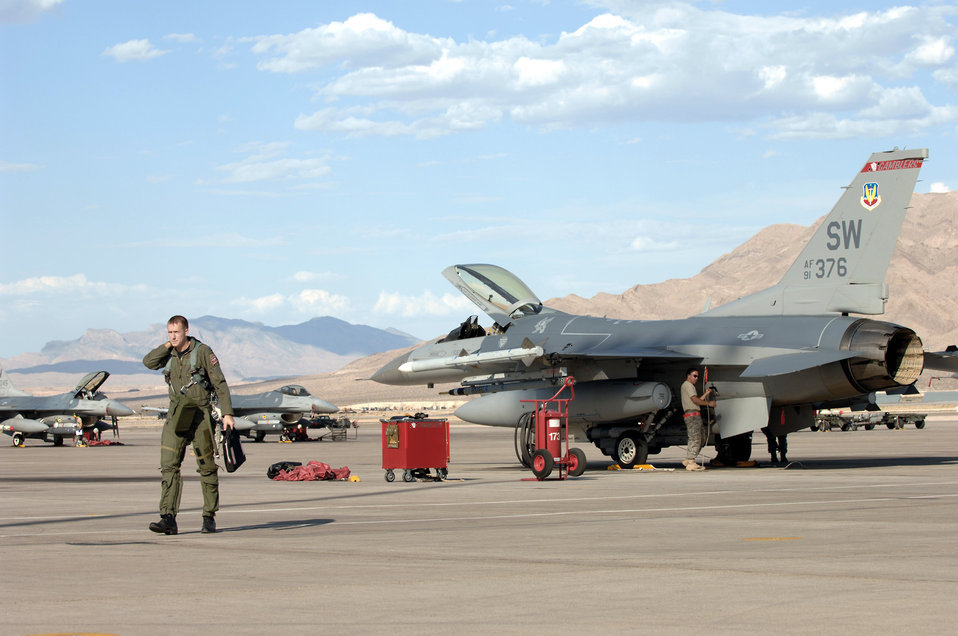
Realistic training with Red Flag

Capt. Taylor Blevins walks away from his a F-16CJ Wild Weasel after completing a training mission July 16 at Red Flag 09-4 at Nellis Air Force Base, Nev. Red Flag is a highly-realistic combat training exercise. Captain Blevins is assigned to the 77th Fighter Squadron.